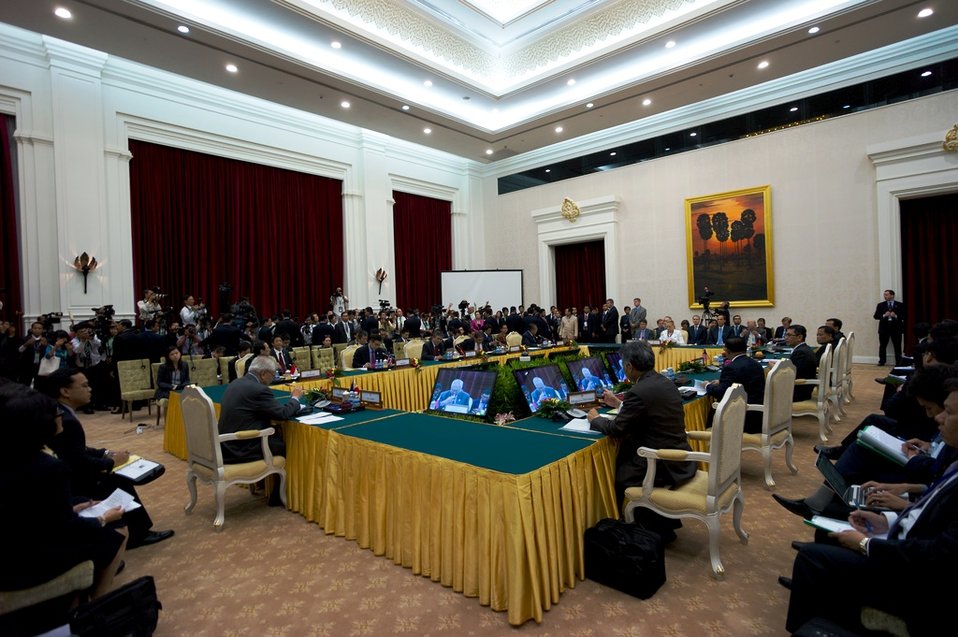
Secretary Clinton at the U.S.-ASEAN Ministerial Meeting

U.S. Secretary of State Hillary Rodham Clinton leads the U.S. delegation at the U.S.-ASEAN Ministerial Meeting in Phnom Penh, Cambodia, on July 11, 2012.